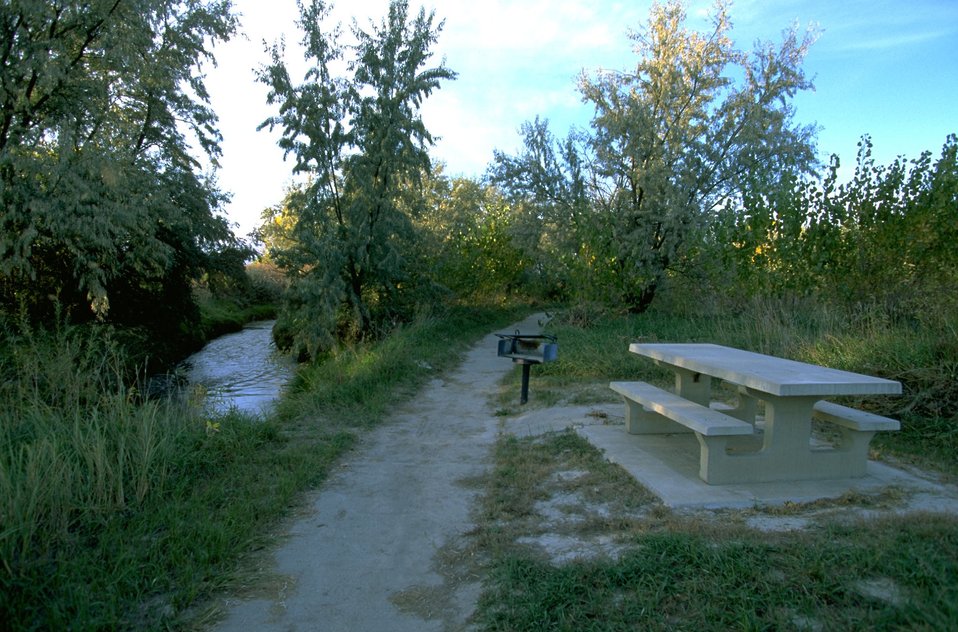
Picnic tables and trail along Jones Creek